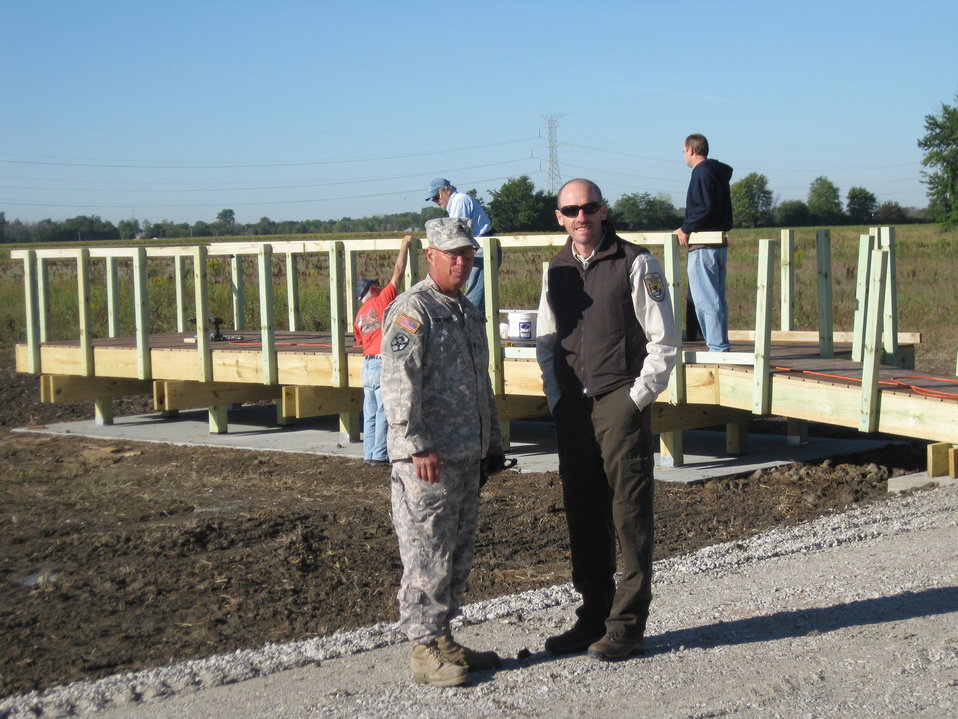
Healing More Than Yourself

Warrior in Transition Volunteer Randy Aspacher with Refuge Manager Jason Lewis in front the Boss Unit Shorebird Observation Platform.